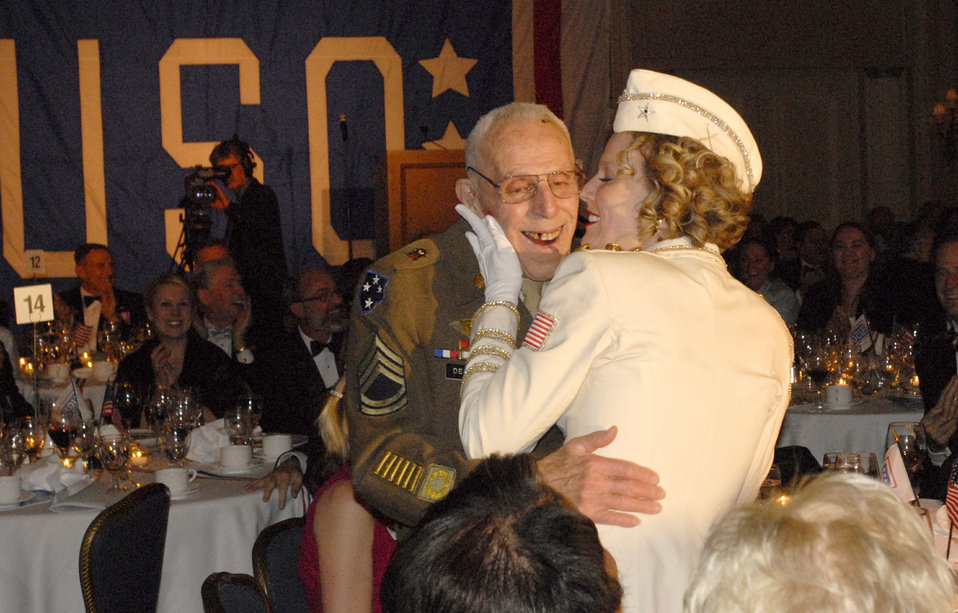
Servicemembers honored at annual USO-Metro gala

Retired Army Sergeant 1st Class Carlo DePorto gets a smooch from the United Services Organization Amercian Belles member Annie Gane during the USO Annual Award Dinner at the Ritz Carlton March 25 in Washington, D.C. Other volunteers and attendees included model and Fox correspondent Leeann Tweeden, Miss America 2009 Katie Stam, former San Francisco 49er Riki Ellison, and NFL Hall of Famer Anthony Munoz, formerly of the Cincinnati Bengals.